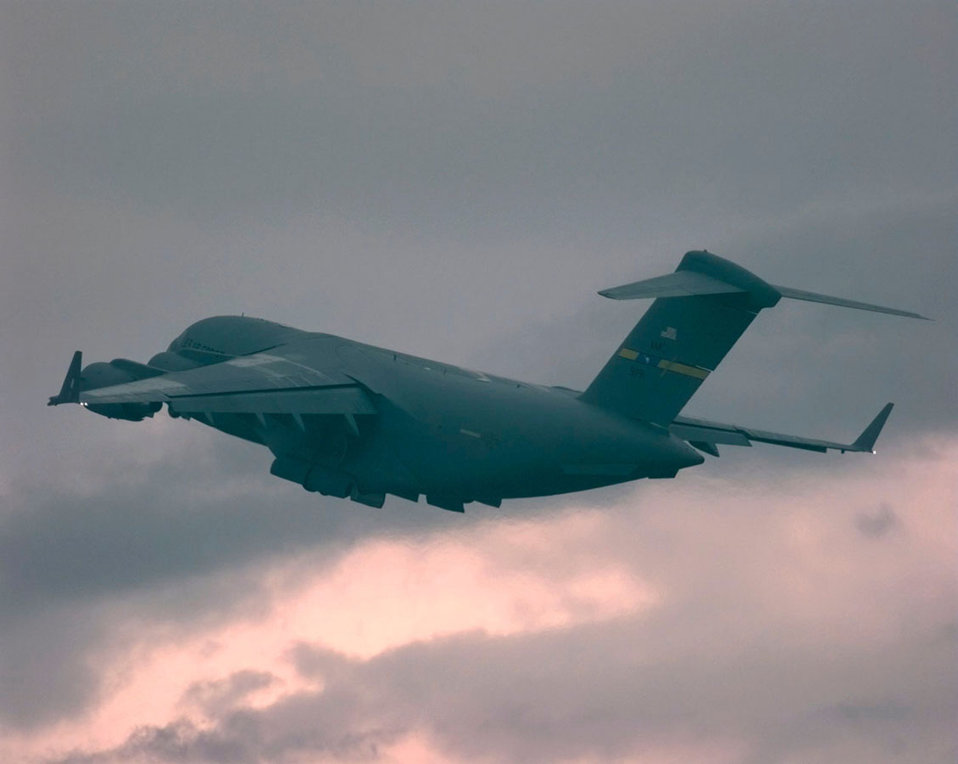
Departure

TIRANA, Albania -- A Charleston C-17 Globemaster departs after delivering cargo to Rinas Airport. Flightline operations continue around the clock at Operation Sustain Hope and NATO Operation Allied Force.